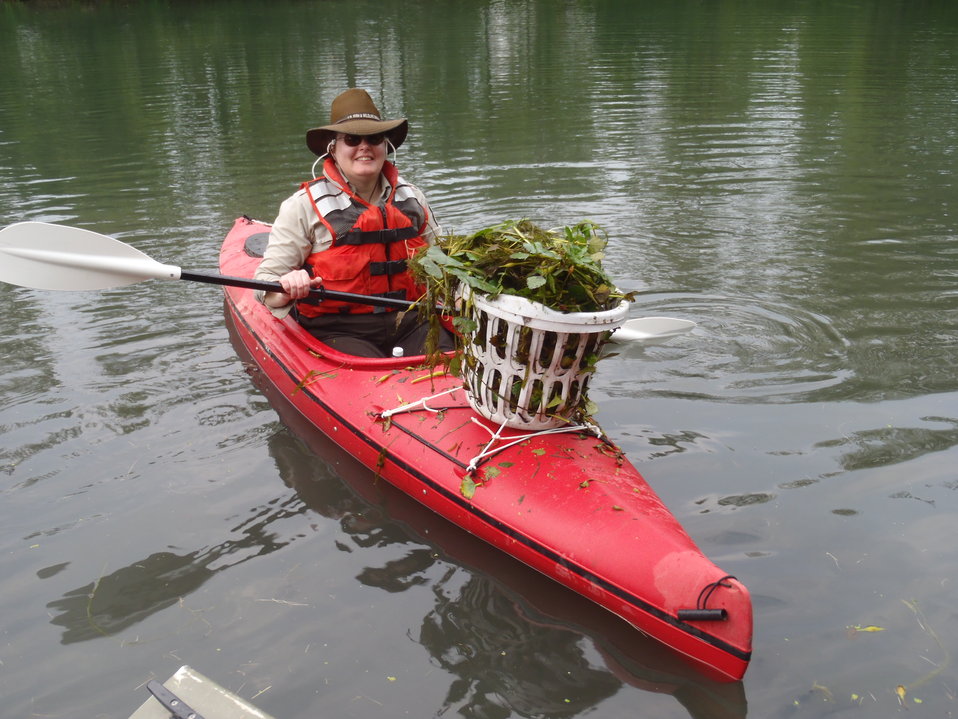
Hand Pulling Water Chestnut

Lower Great Lakes FWCO Biologist, Tracy Copeland, with a basket full of water chestnut rosettes handpulled from Tonawanda Creek in 2011.